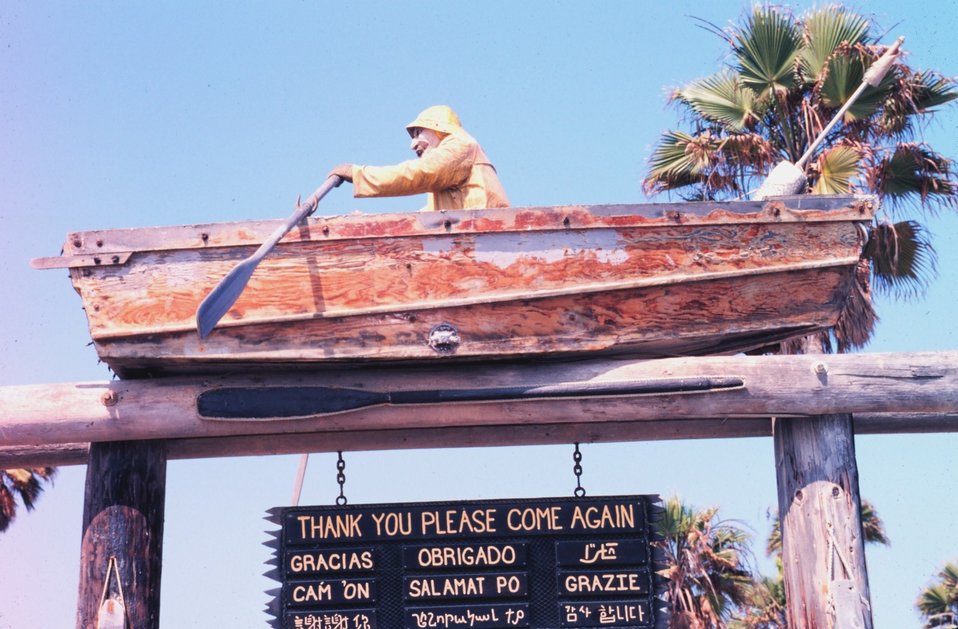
Views of the Dory Fleet Market